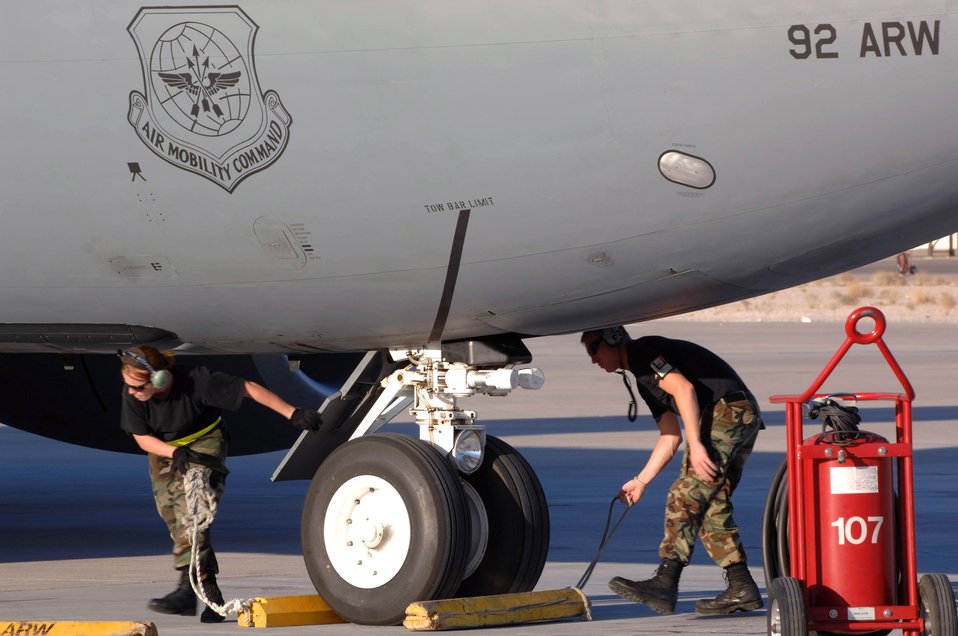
Revving up for Red Flag

Crew chiefs Tech. Sgt Jon Chasse and Senior Airman Jacylyn Sporczc perform an aircraft quick-turn of a KC-135 Stratotanker Aug. 28 during the Red Flag 07-3 exercise at Nellis Air Force Base, Nev. Servicemembers from all the U.S. military branches, along with coalition forces, are participating in the event. The Airmen are assigned to the 92nd Air Refueling Wing at Fairchild AFB, Wash.